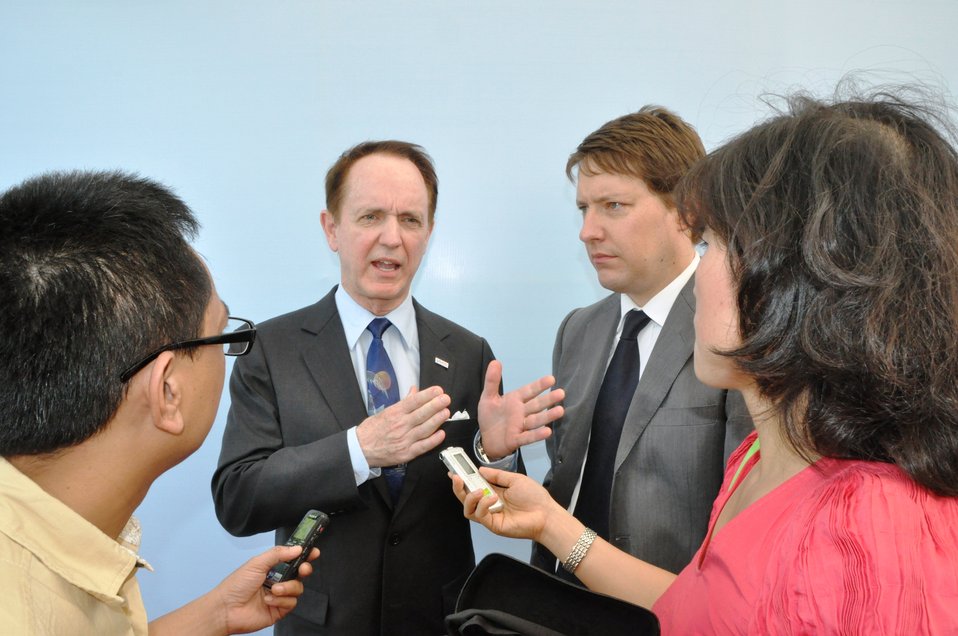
USAID Mission Director Francis Donovan Meets the Press at the Environmental Remediation of Dioxin Contamination at Danang Airport Project Launch

Danang, August 9, 2012